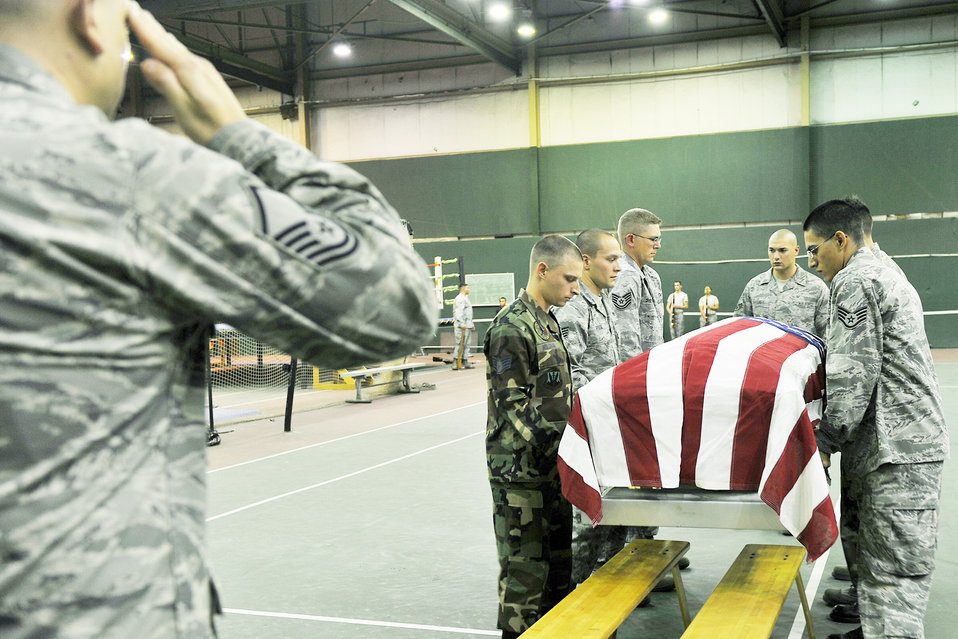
Training for excellence

Master Sgt. David Schmidt administers military honors while other base honor guard members carry the casket during a training session Oct. 21, 2009, at Offutt Air Force Base, Neb. Air Force Honor Guard trainers visited Offutt AFB to evaluate and help sharpen the skills of base honor guard members. Sergeant Schmidt is an Offutt AFB honor guard member.